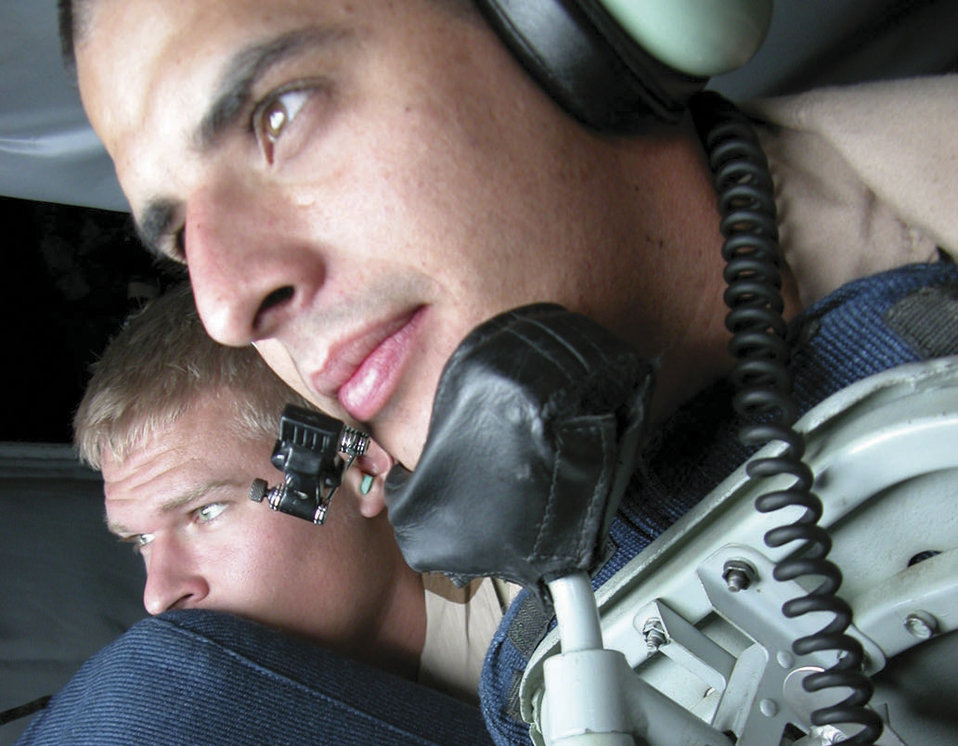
Airmen deliver fuel in flight

SOUTHWEST ASIA -- Staff Sgt. Jonny Gomez (right) prepares to unload fuel to a waiting B-52 Stratofortress while U.S. Air Force Academy Cadet Alex Divine watches. Sergeant Gomez is a KC-135 Stratotanker boom operator with the 340th Expeditionary Air Refueling Squadron at a forward-deployed location. Cadet Divine is deployed as part of an academy summer program.